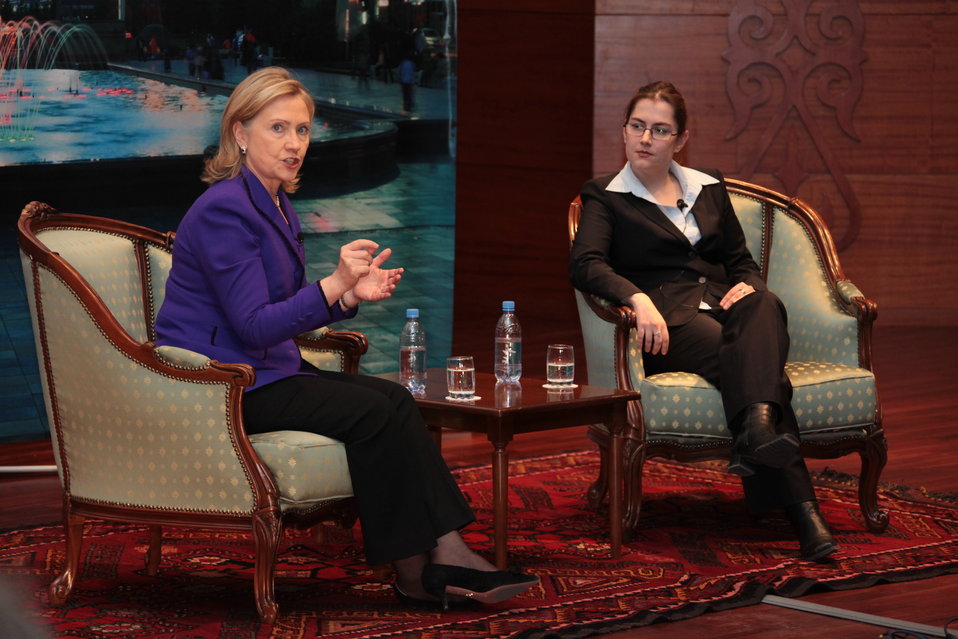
Secretary Clinton Responds to a Question

U.S. Secretary of State Hillary Rodham Clinton responds to a question at a town hall on “Empowering Civil Society for Central Asia’s Future” in Astana, Kazakhstan, on November 30, 2010.